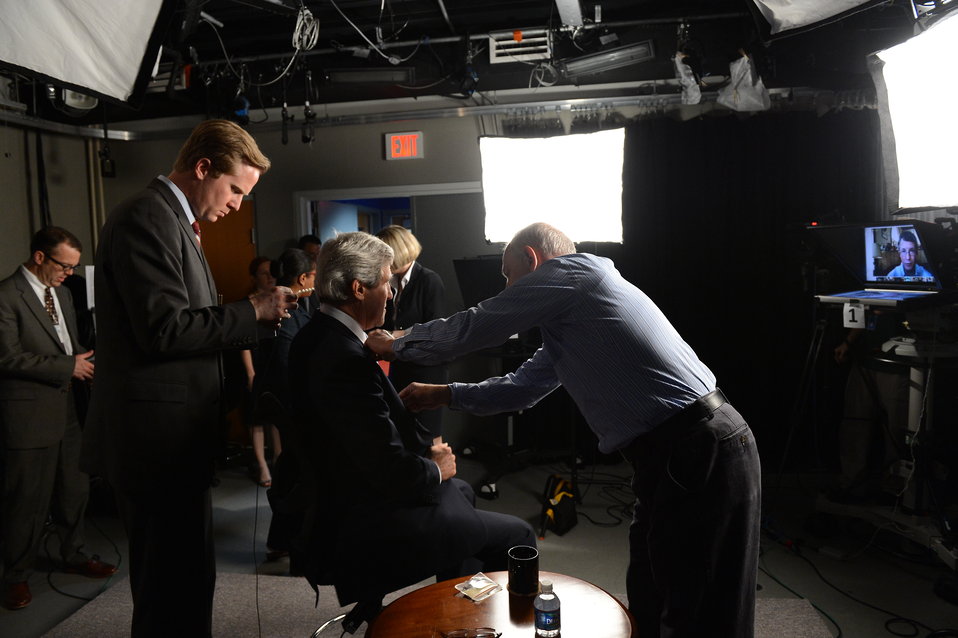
Secretary Kerry Prepares for his Google Hangout

U.S. Secretary of State John Kerry prepares for his Google Hangout with NBC's Andrea Mitchell at the U.S. Department of State in Washington, D.C., on May 10, 2013.